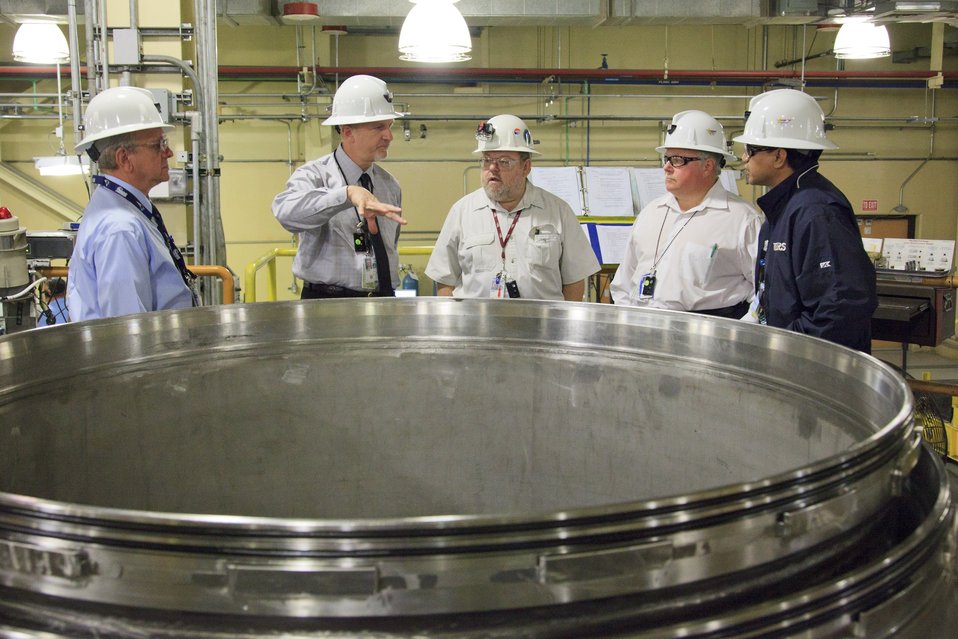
Los Alamos National Laboratory Celebrates 1000th Transuranic Waste Shipment